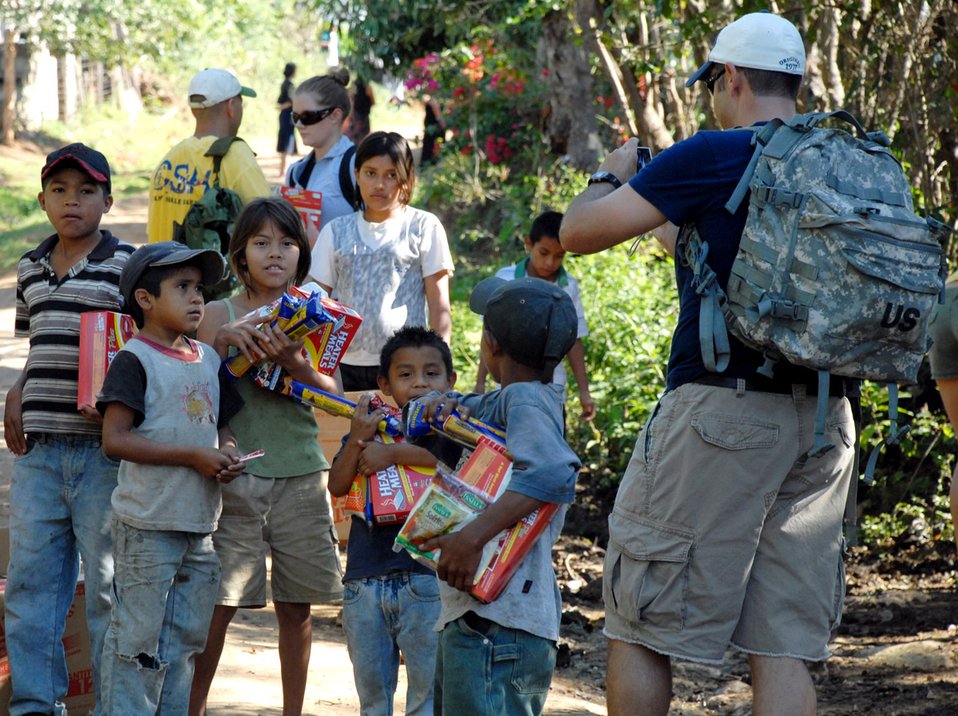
Hikers continue delivering food to Hondurans

A member of Joint Task Force-Bravo takes a digital image of his new friends during a Feb. 2 hike into the mountains surrounding Comayagua, Honduras. More than 60 JTF-Bravo personnel deliverd more than 2,000 pounds of food to local Hondurans during a chapel hike which allows JTF-Bravo members the opportunity to see the countryside as well as interact with the locals.